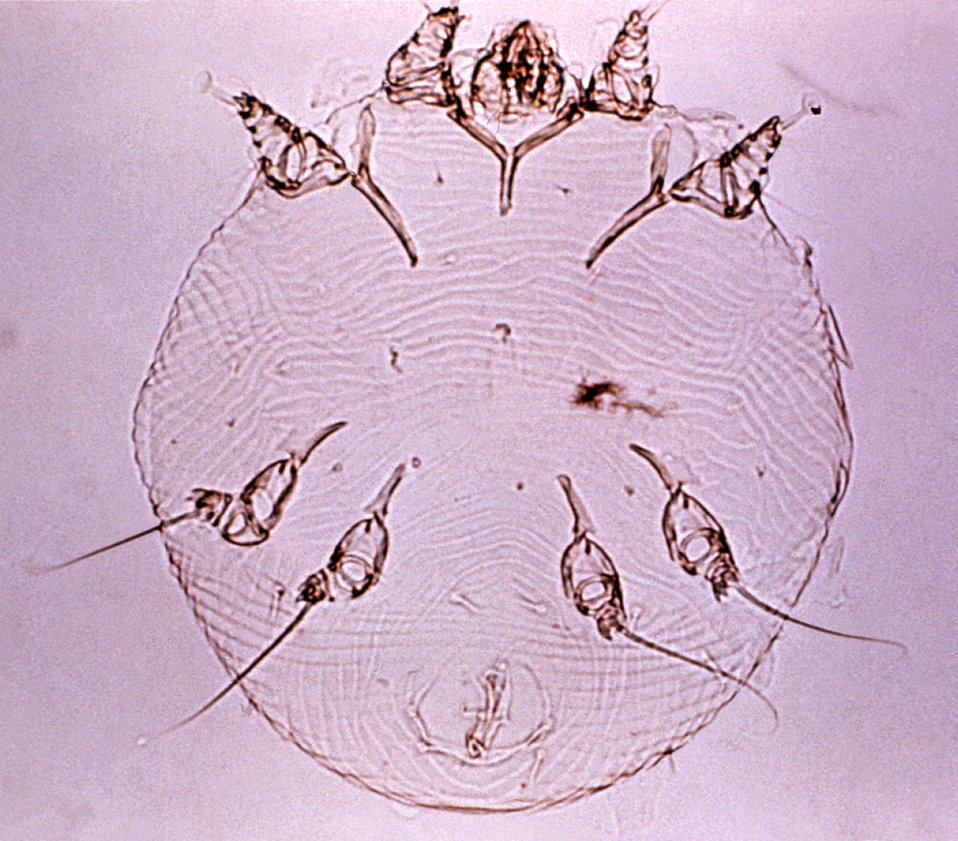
This micrograph depicts a ventral view of a cleared and mounted Sarcoptes scabei mite specimen.